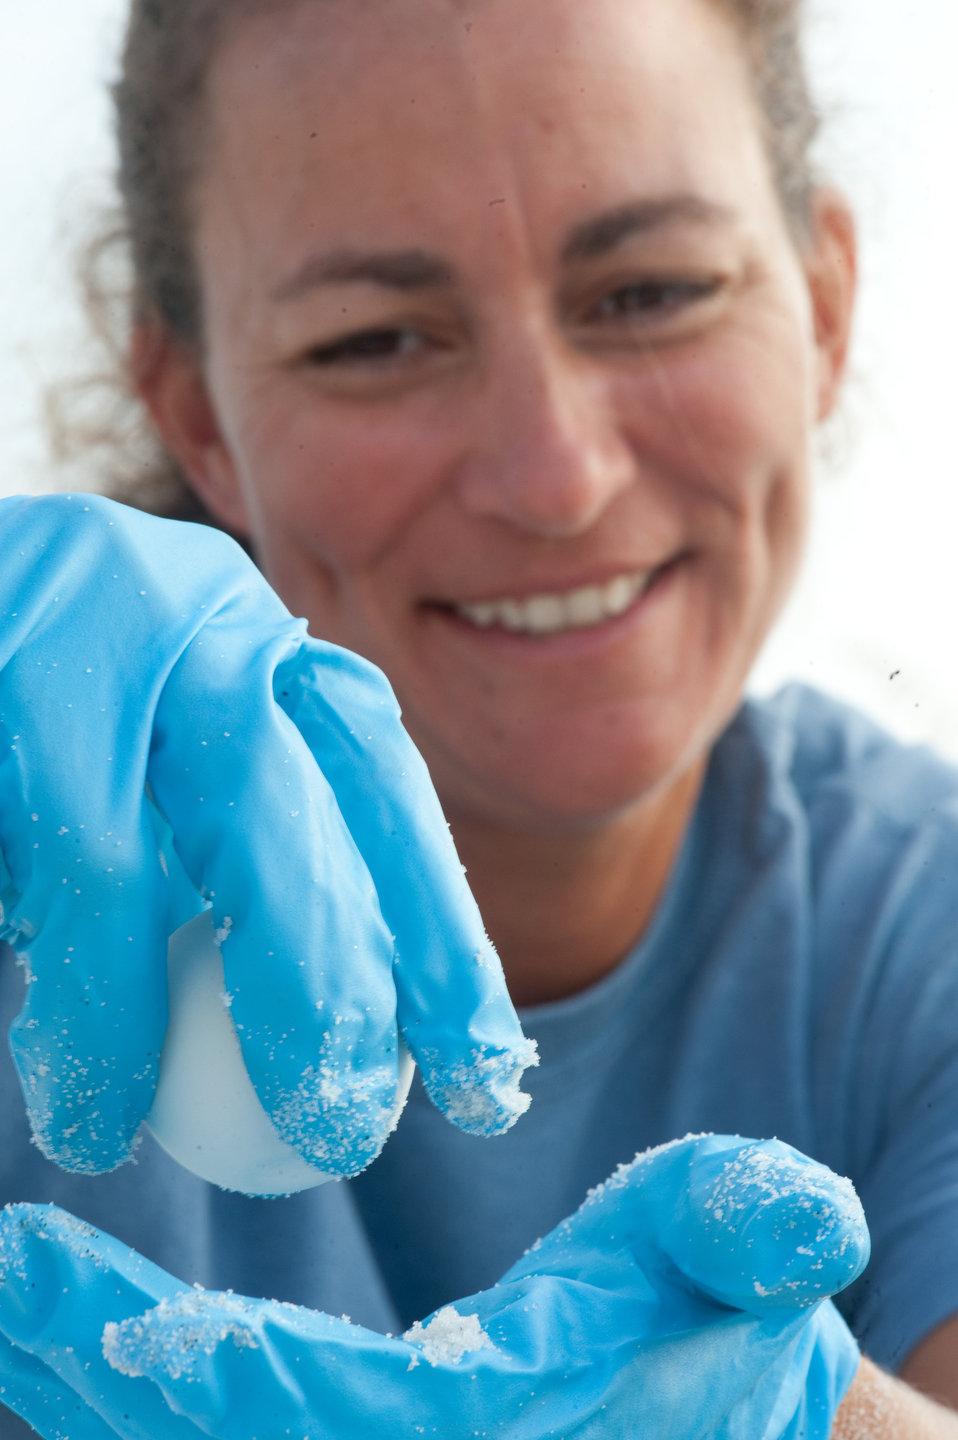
Turtle Eggs avoid Gulf Oil Danger

Kelley Anderson-Nunley very slowly carries a Loggerhead sea turtle egg to a Styrofoam cooler lined with white sand at Eglin Air Force Base, Florida, on August 9, 2010. Ms. Anderson-Nunley is a contract wildlife technician with Colorado State University. The gloves prevent skin oil from coming in contact with the egg. The 112 eggs of this nest will all get the gentle slow-motion lift from their beach nest. Because of the critical attachment of the embryo to the inside of the eggshell, the eggs must be gently lifted with out tilting or rotating, the egg. With equal care the transportation to the Atlantic coast is equally critical. At a controlled climate facility, they will be allowed to hatch in the cooler. Wildlife technicians will then release them into the ocean.